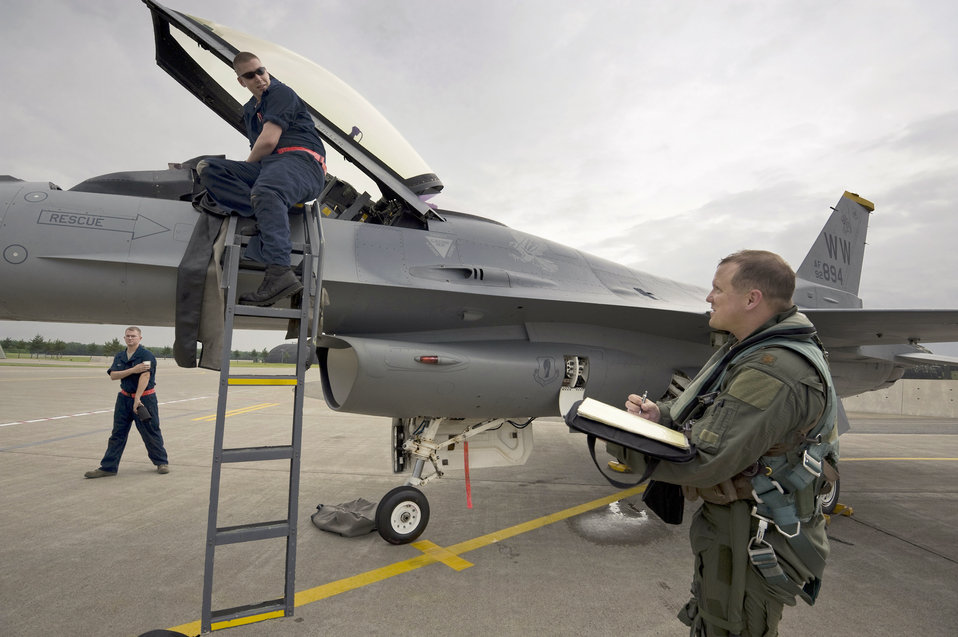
Falcon maintenance

Maj. John Greven asks Airman 1st Class Patric Shaw about local policies following a training sortie Aug. 2, 2010, at Misawa Air Base, Japan. Major Greven is an A5 plans and exercises officer with Detachment 1 of 13th Air Force and Airman Shaw is a crew chief assigned to the 13th Aircraft Maintenance Unit.